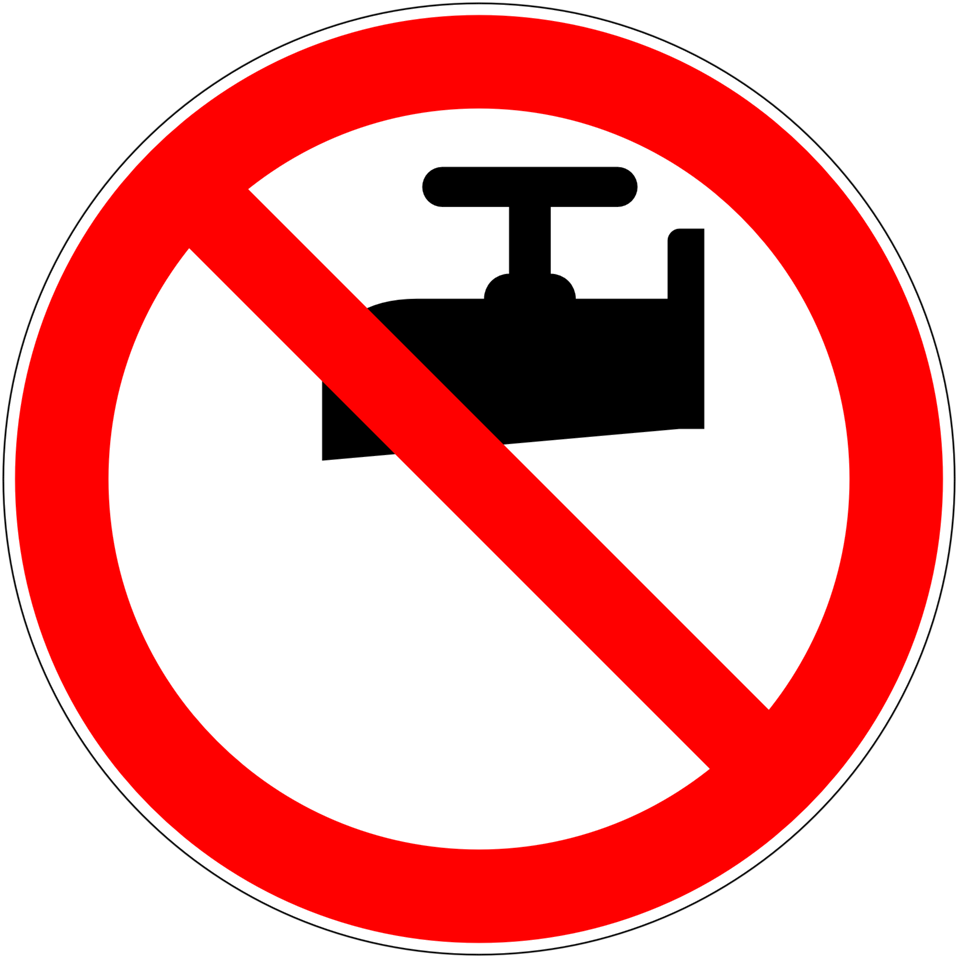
Deutsch: Kein Trinkwasser, Verbotszeichen D-P005 nach DIN 4844-2 No drinking water, prohibition sign D-P005 according to German standard DIN 4844-2